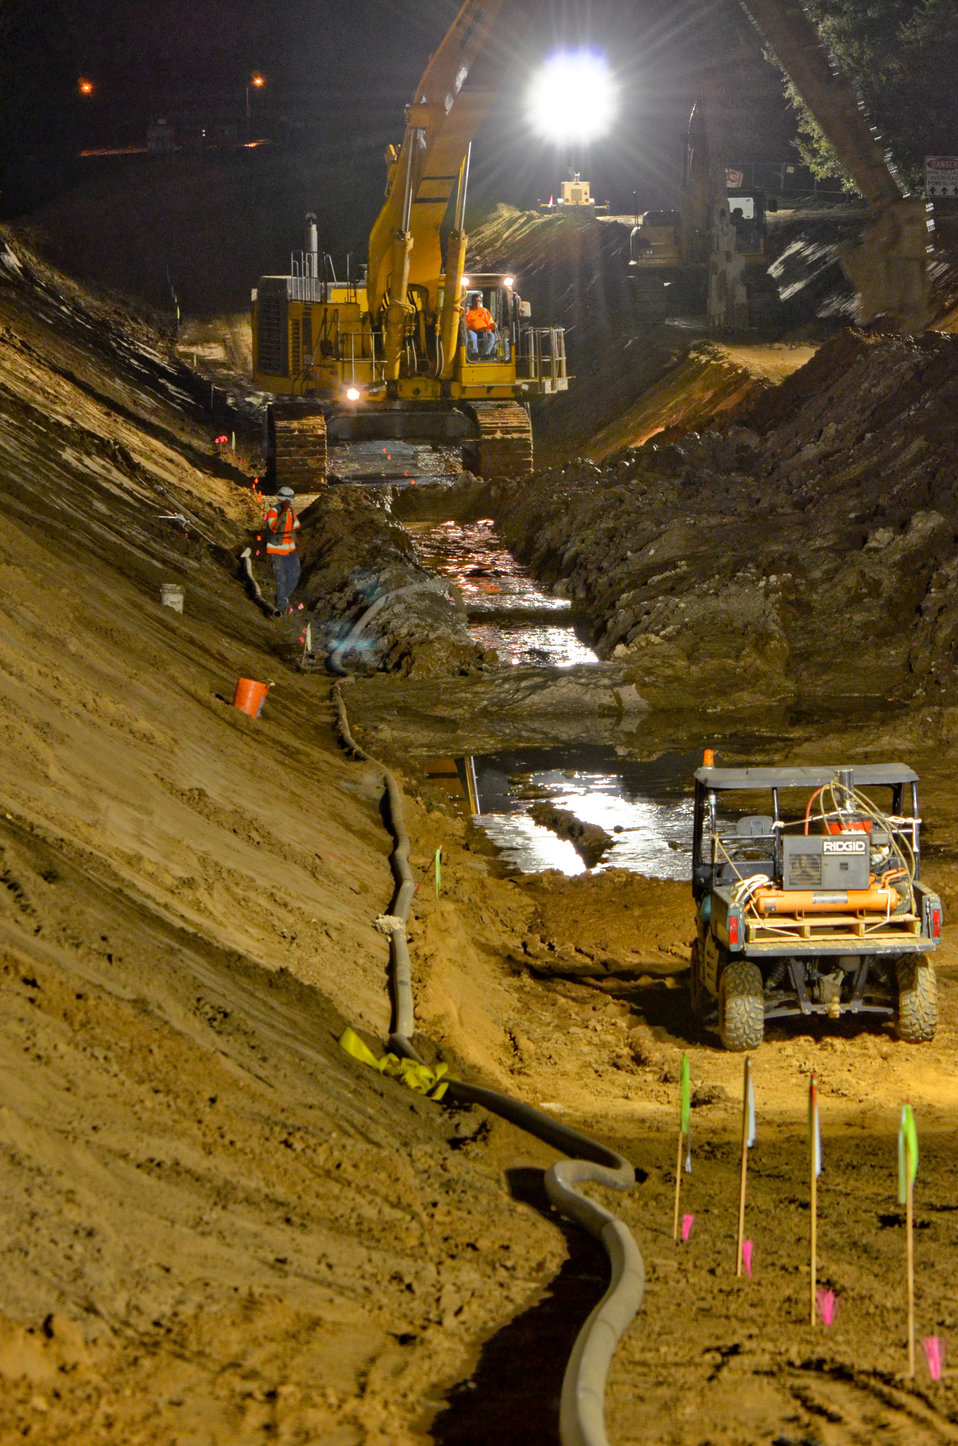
Seepage cutoff wall nighttime construction along the American River

Construction crews work in darkness--when energy demand is lowest--on a stretch of American River levee near the California State University-Sacramento campus Sept. 12, 2012 to close a 900-foot-long gap in a seepage cutoff wall underneath high power lines.
The Corps has built more than 20 miles of seepage walls into American River levees since 2000. Areas where construction was complicated by utilities, bridges or power lines were set aside for later construction.
The project is part of the American River Common Features project, a joint flood risk reduction effort between the Corps, the state’s Central Valley Flood Protection Board/Department of Water Resources and the Sacramento Area Flood Control Agency.